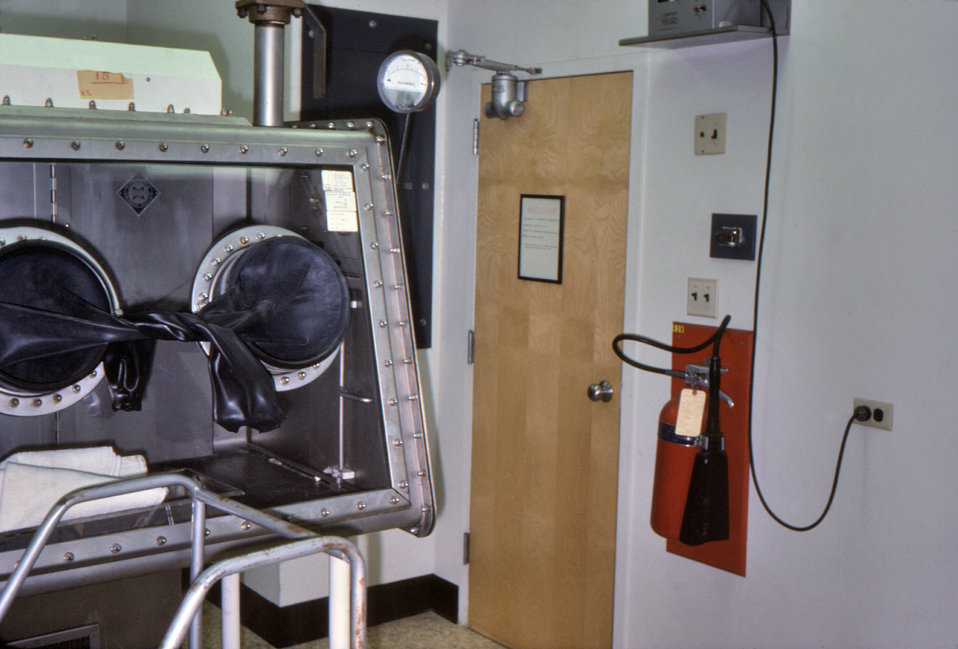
This photograph depicts the glove ports providing airtight access to a controlled atmospheric chamber, or a 'glove box', which was located within the CDC's first maximum containment laboratory facility. Jim Lang was among many of the CDC's laboratory researchers who used this lab during the Marburg investigation of 1975.